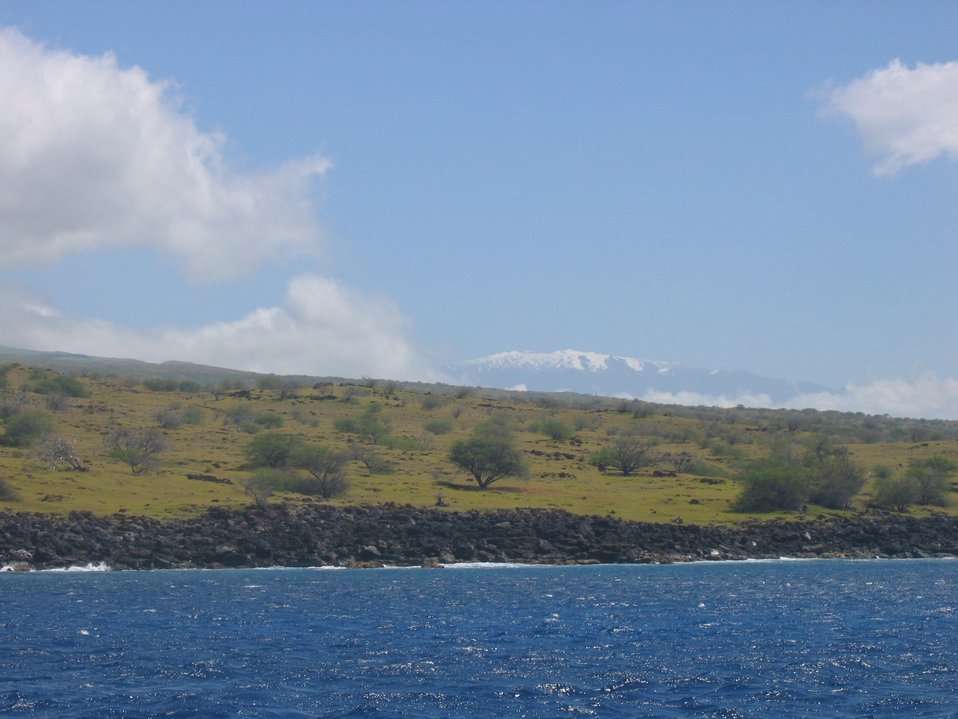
A snow-clad Mauna Kea looms above palm trees and a basaltic shoreline.